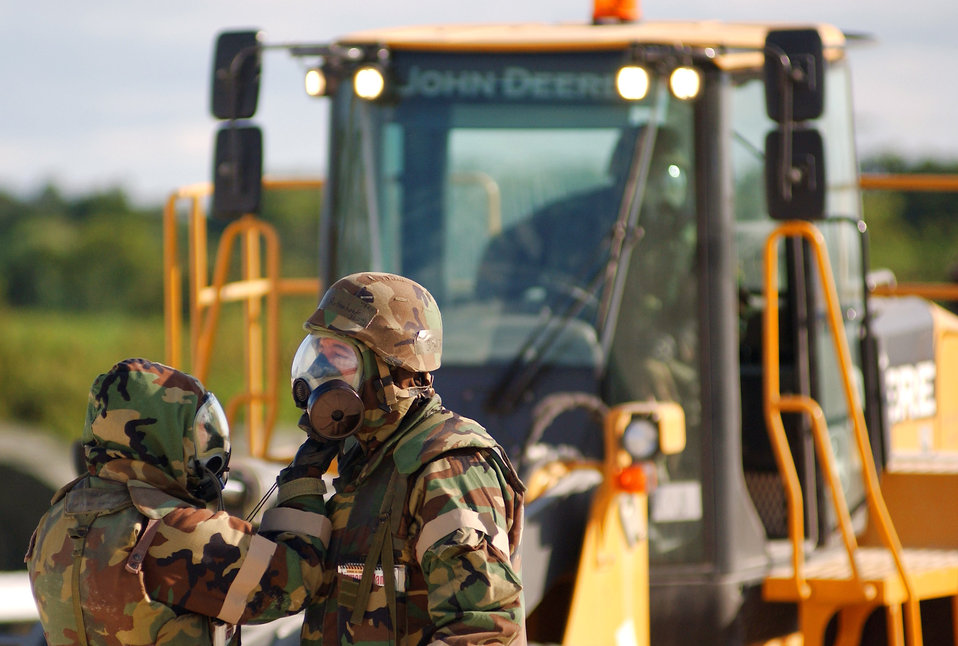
Airmen train for contingency operations during Silver Flag

Airmen conduct buddy checks after donning their gas masks during Silver Flag Nov. 24 at Kadena Air Base, Japan. During the exercise, which is run by Det. 1, 554th RED HORSE Squadron members, Airmen trained to establish and sustain a forward operating base in simulated wartime conditions.